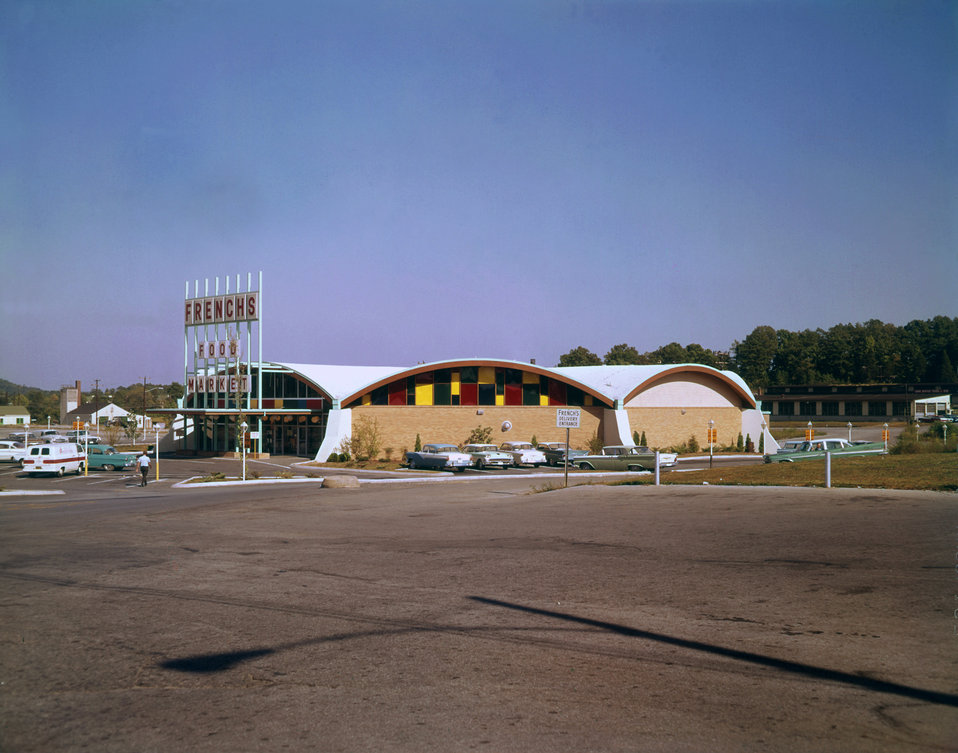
French's Market Oak Ridge

DOE photo by Ed Westcott 1960s Oak Ridge Tennessee